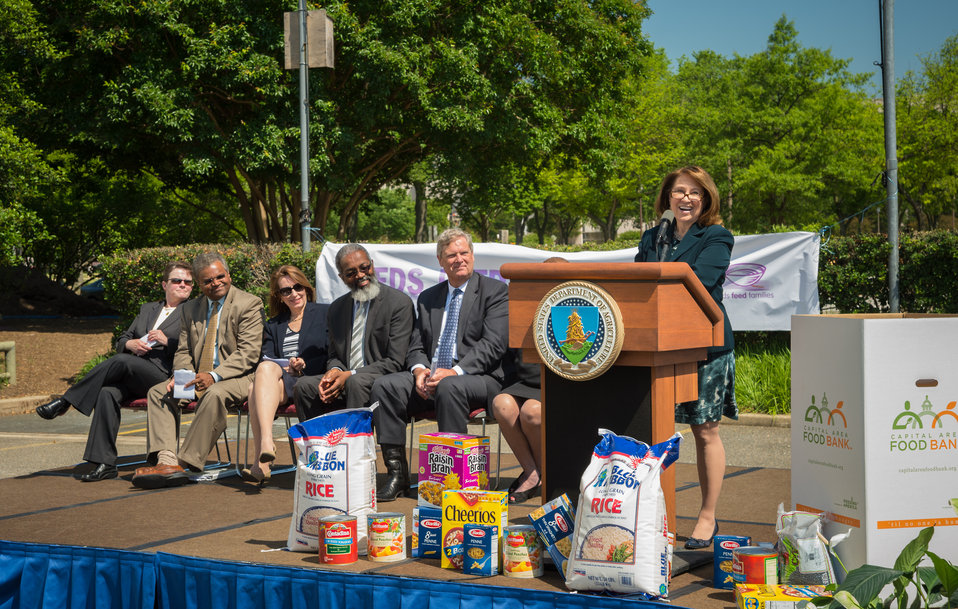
Dr. Karlese Kelly, Provost, United States Department of Agriculture (USDA), Virtual University offered closing remarks at the 2014 National Feds Feed Families Kick-Off at the UUSDA’s People’s Garden in Washington, DC, Mon. Jun. 2, 2014. The theme of this year’s event is, “Help Knock Out Hunger.” On stage behind Dr. Kelly are Pamela Mitchell, Deputy Chief Human Capital Officer, Department of Defense, Mathy Stanislaus, Assistant Administrator for the Office of Solid Waste and Emergency Response, Environmental Protection Agency (EPA), Nancy Roman, President and Chief Executive Officer, Capital Area Food Bank, Dr. Gregory Parham, Assistant Secretary for Administration and Agriculture Secretary Tom Vilsack.